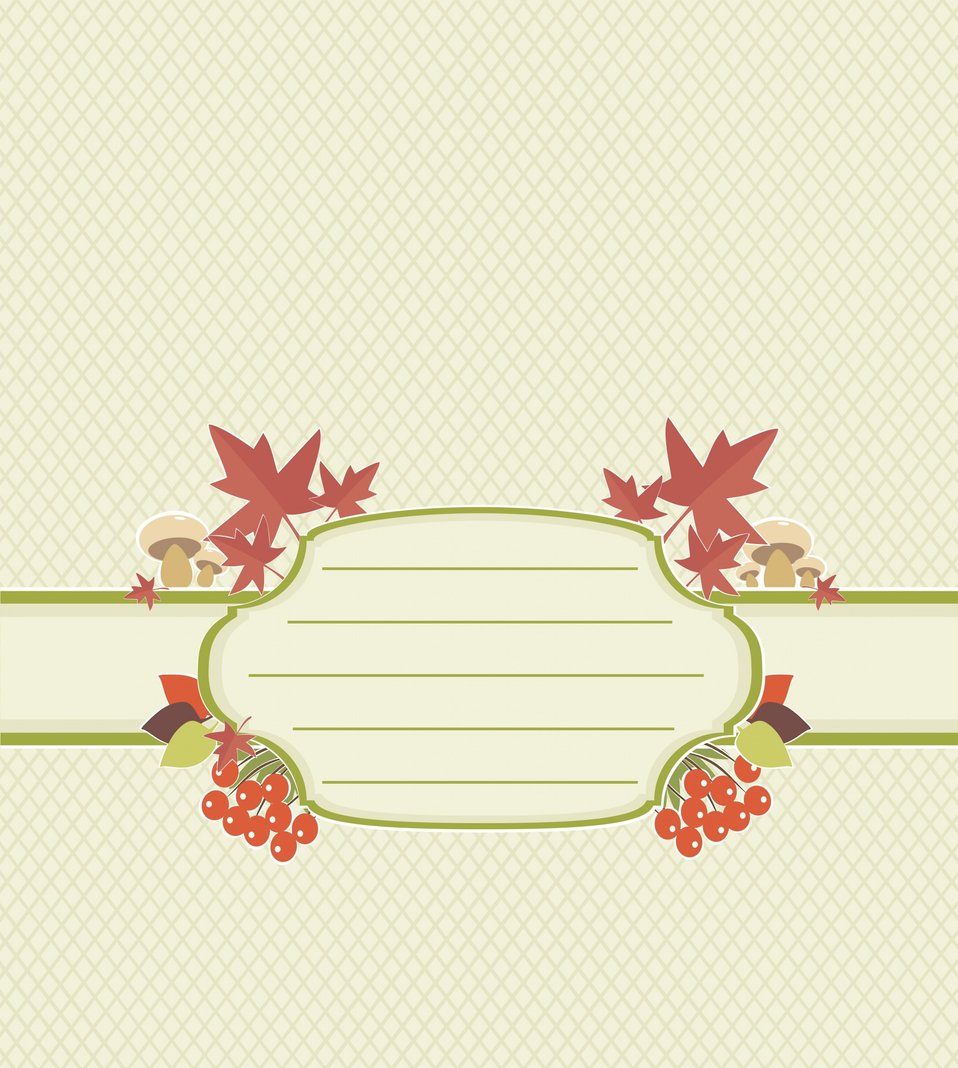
Abstract background with autumn symbols.